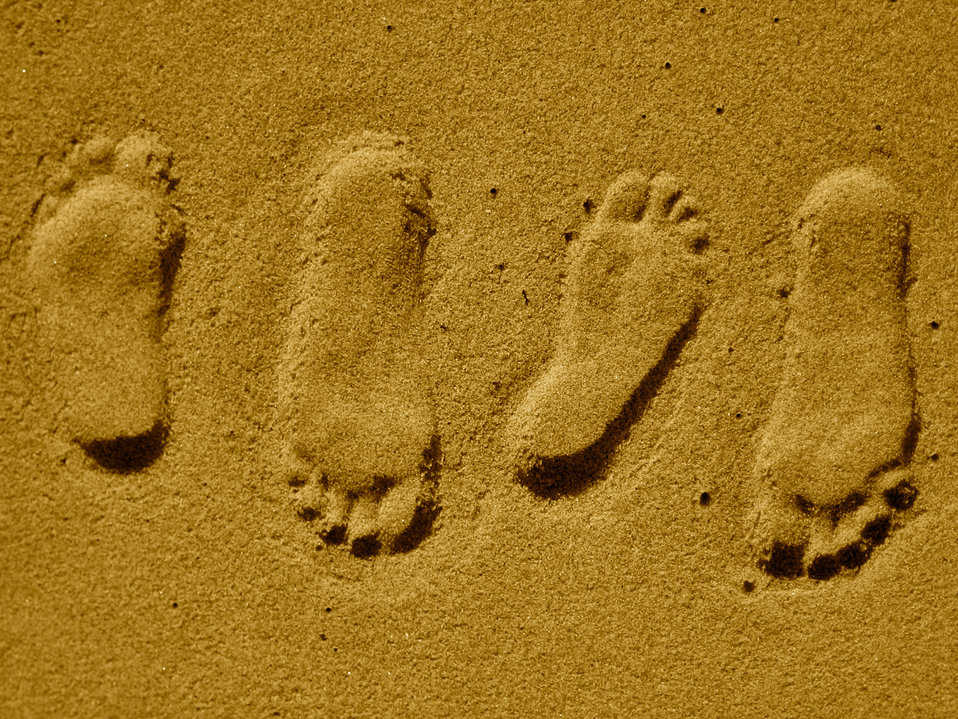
Lovers steps

Footprints by great lovers!!!.